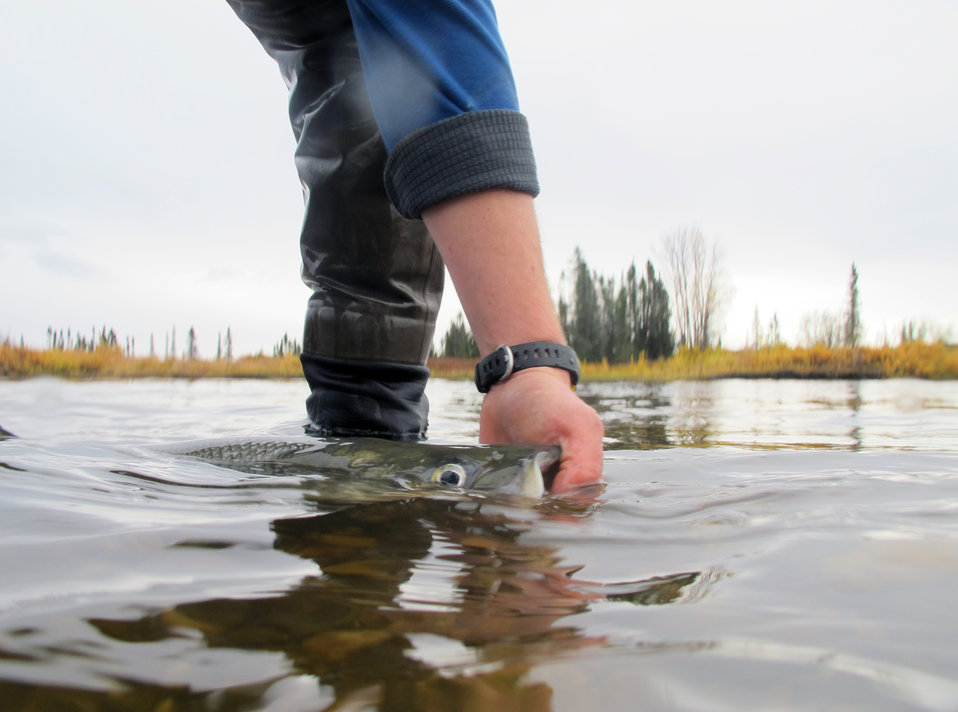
Selawik River sheefish

The Fairbanks Fish and Wildlife Field Office, in cooperation with the Selawik National Wildlife Refuge, Village of Selawik, Office of Subsistence Management and others, is studying the Selawik River spawning population. The project is designed to monitor annual abundance and age structure of the spawning population to identify trends in abundance over time and simultaneous data on recruitment of cohorts from brood years before and after a large permafrost thaw slump upstream began emitting sediment into the Selawik River. USFWS / Katrina Mueller